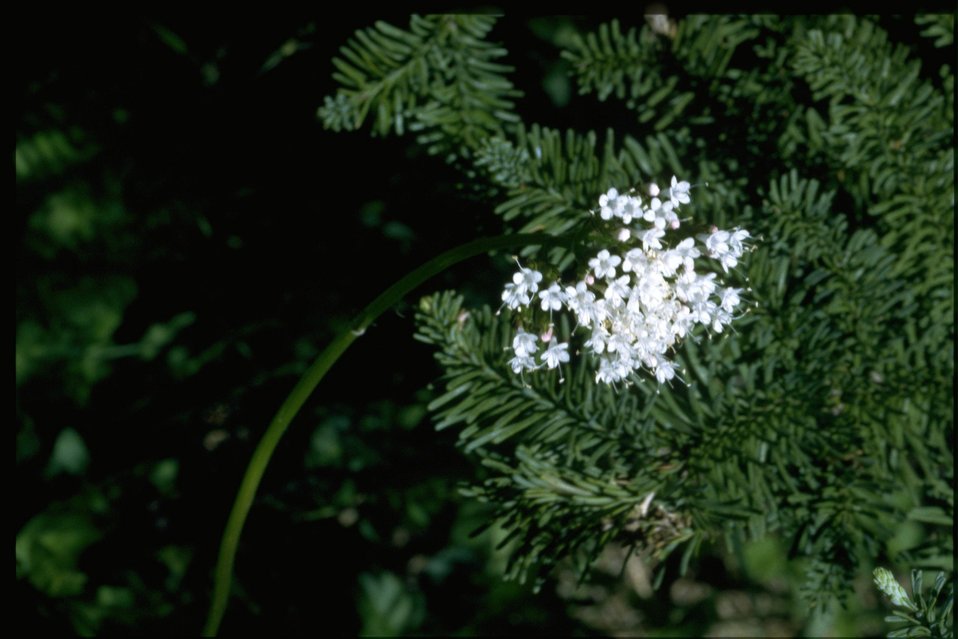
Farshot of Valeriana sitchensis.